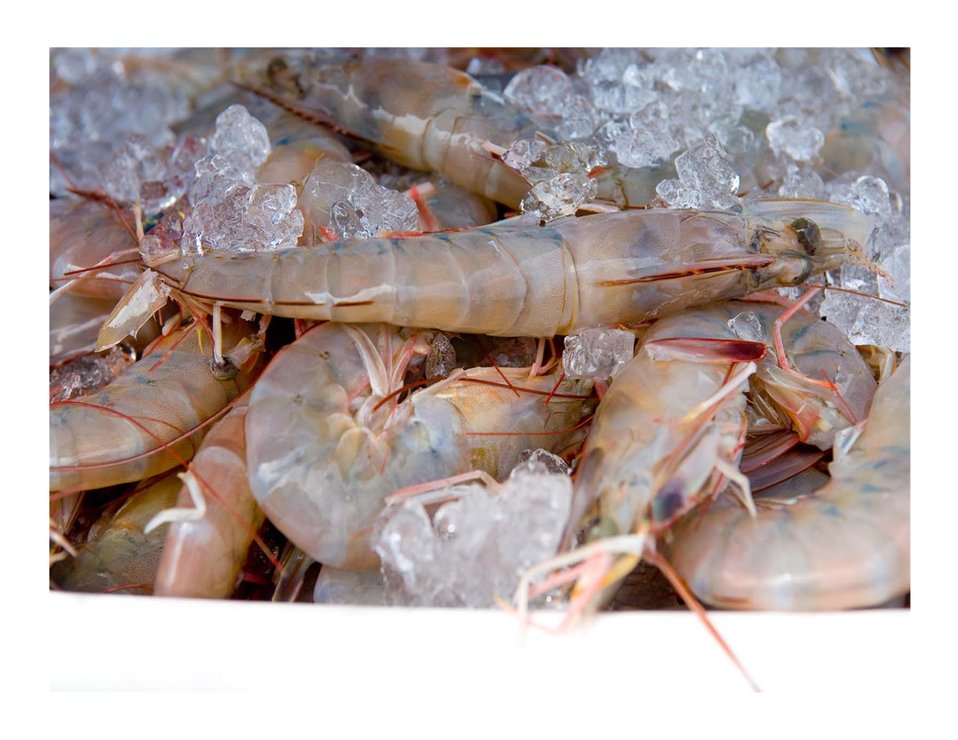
Shrimp close up, Louisiana